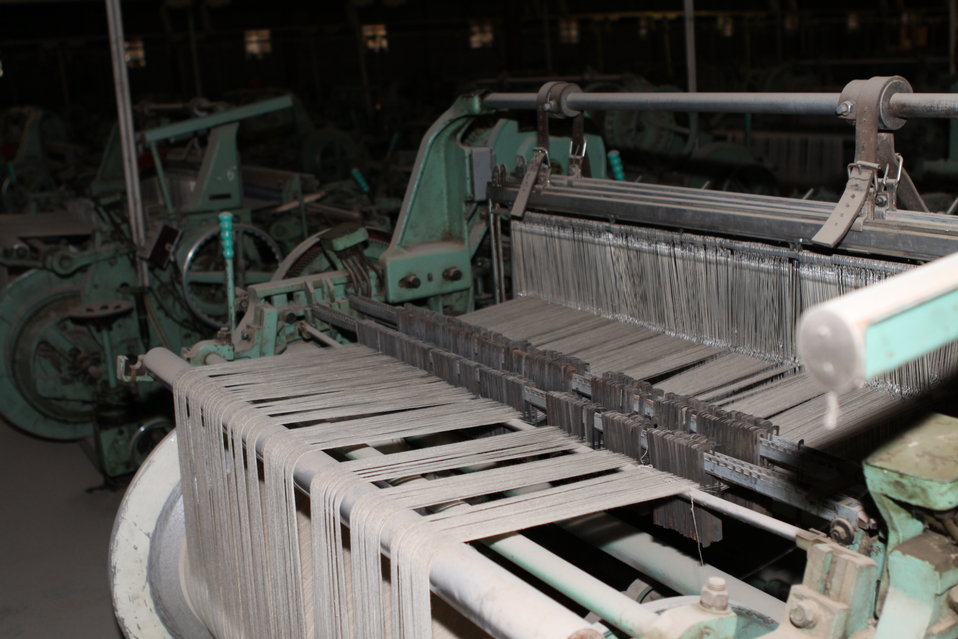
100525 Hirat Textile Company 738